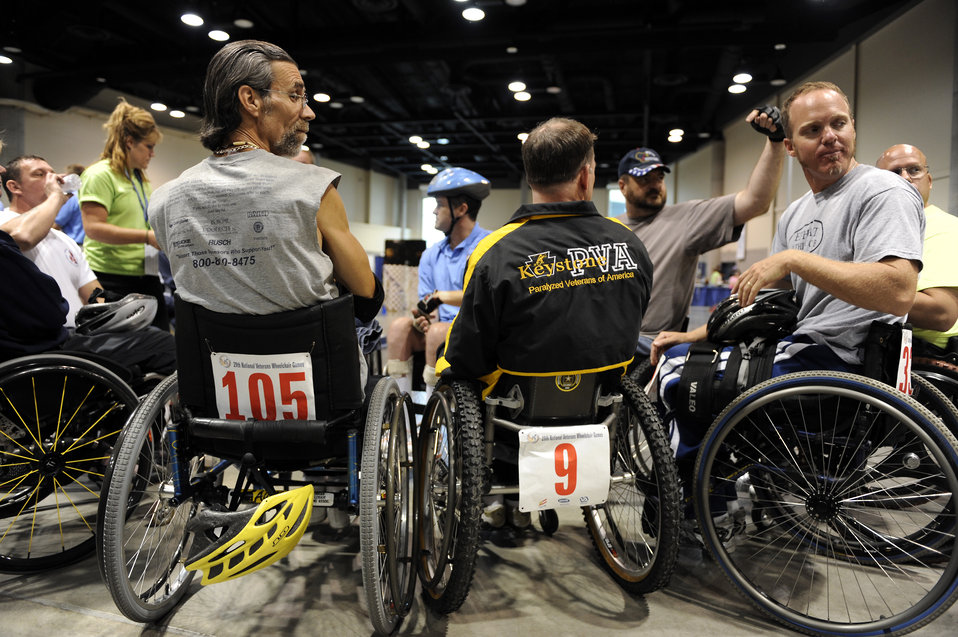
Volunteers ensure success at Veterans Wheelchair Games

Veterans gather in the Spokane Convention Center before the slalom super G competition begins during the 29th National Veterans Wheelchair Games July 16 in Spokane, Wash.